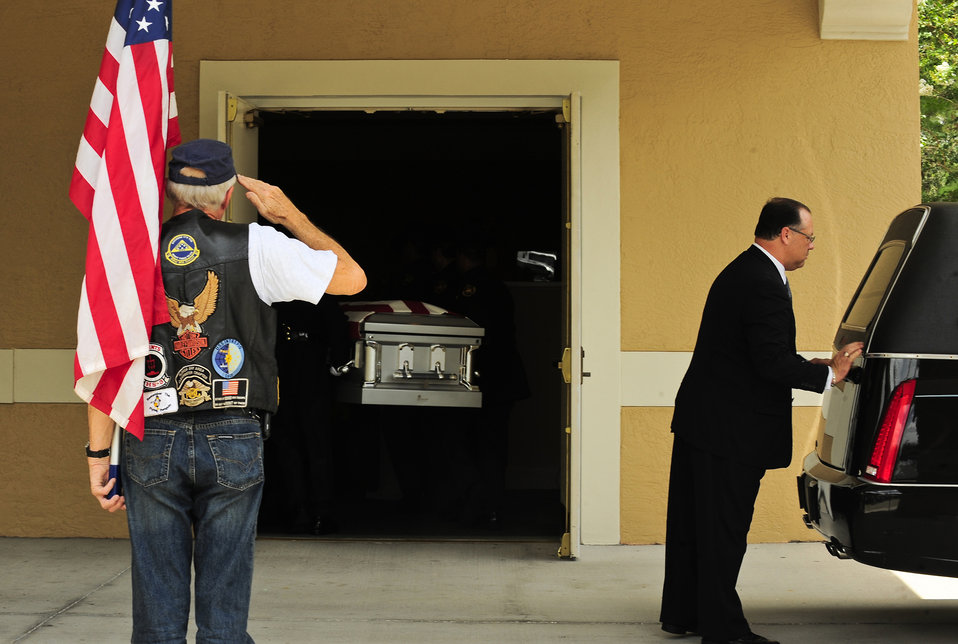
Fallen Heroes

A veteran salutes fallen hero Army Staff Sgt. Ricardo Seija as he is taken into a funeral home July 17, 2012, in Tampa Fla. Seija died July 8, 2012. The 31-year-old Soldier is survived by his widow and a young son.